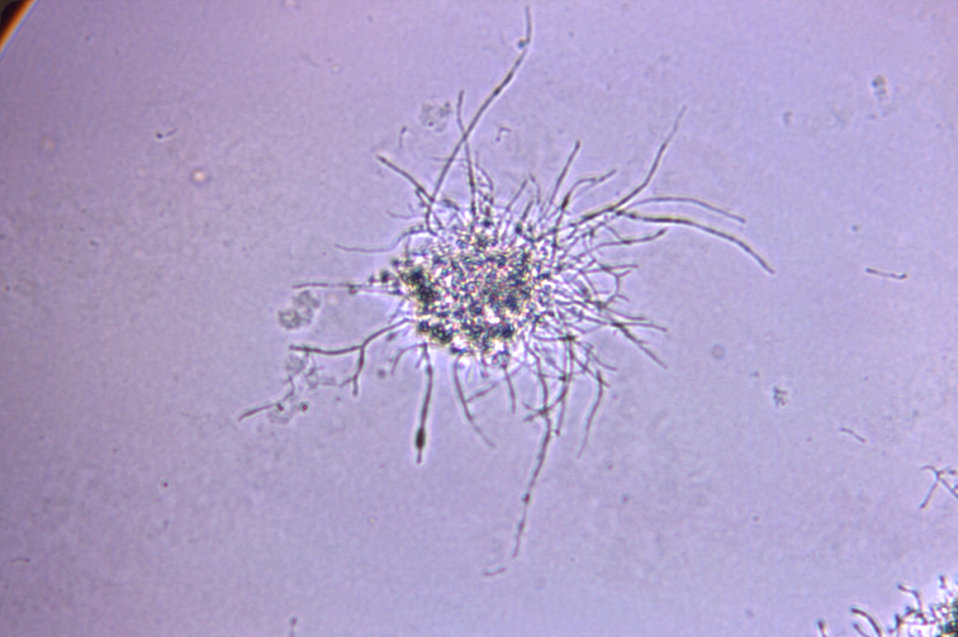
Magnified 380X, this image depicts the morphologic characteristics displayed by a Gram-positive, Actinomyces naeslundi bacterial microcolony, of the strain, W-1096, which was cultivated, for a 20 hour time period, on an unknown culture medium.